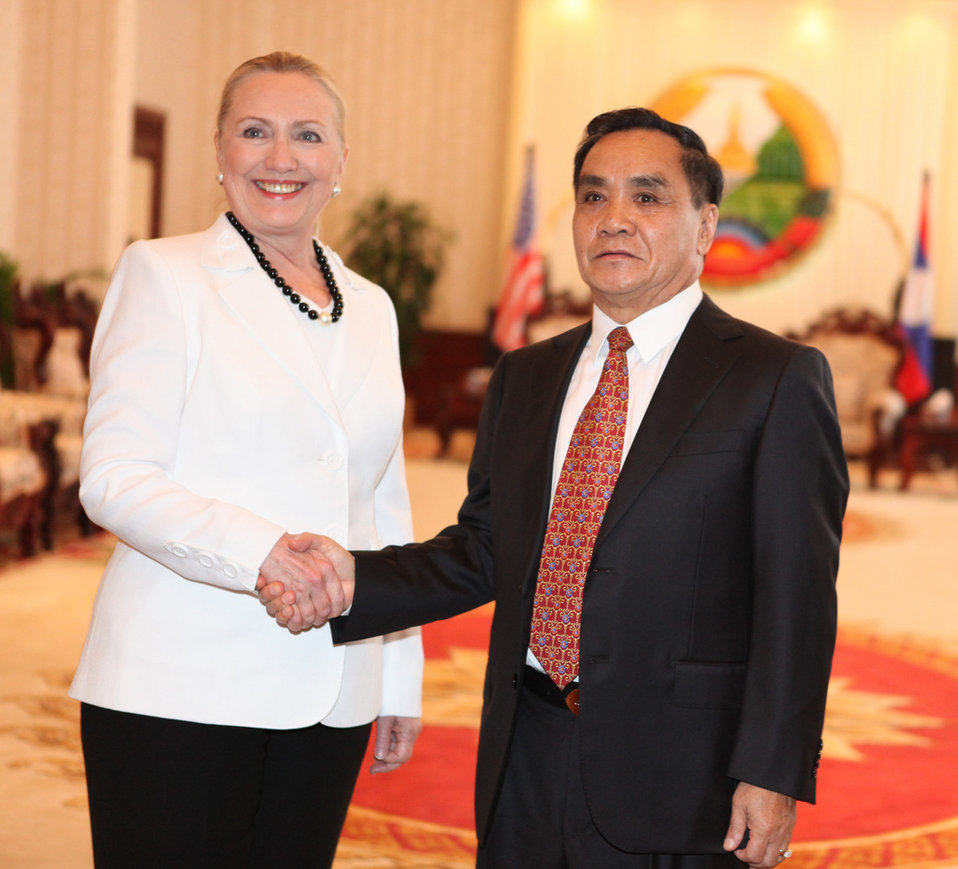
Secretary Clinton Meets With Laotian Prime Minister Thammavong

U.S. Secretary of State Hillary Rodham Clinton and Laotian Prime Minister Thongsing Thammavong meet at the Prime Minister's Office in Vientiane, Laos, on July 11, 2012.